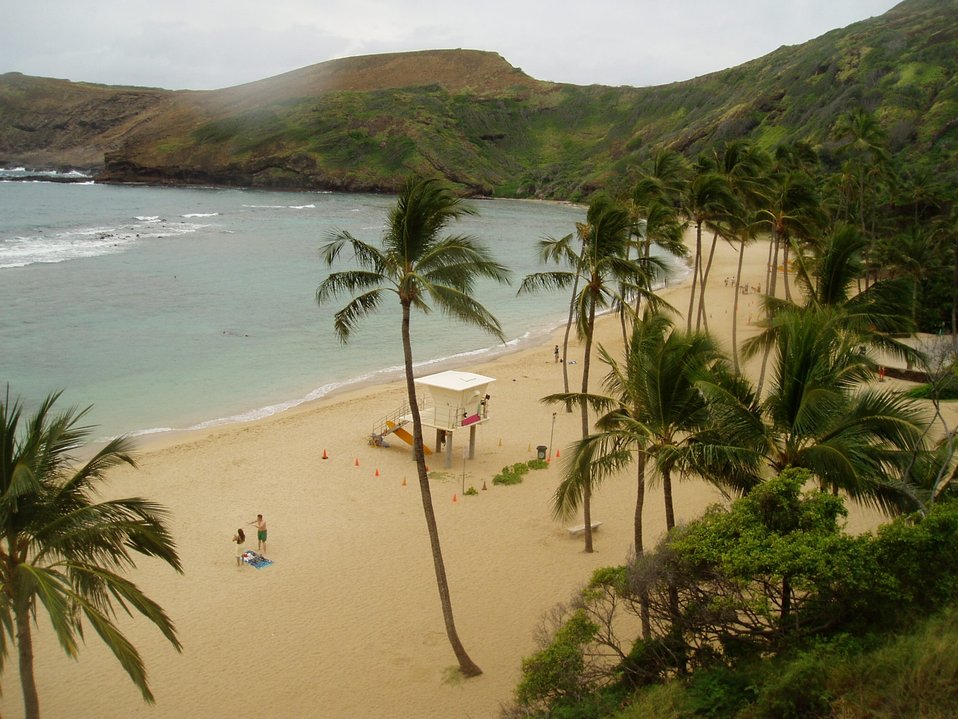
Hanauma Bay, Oahu